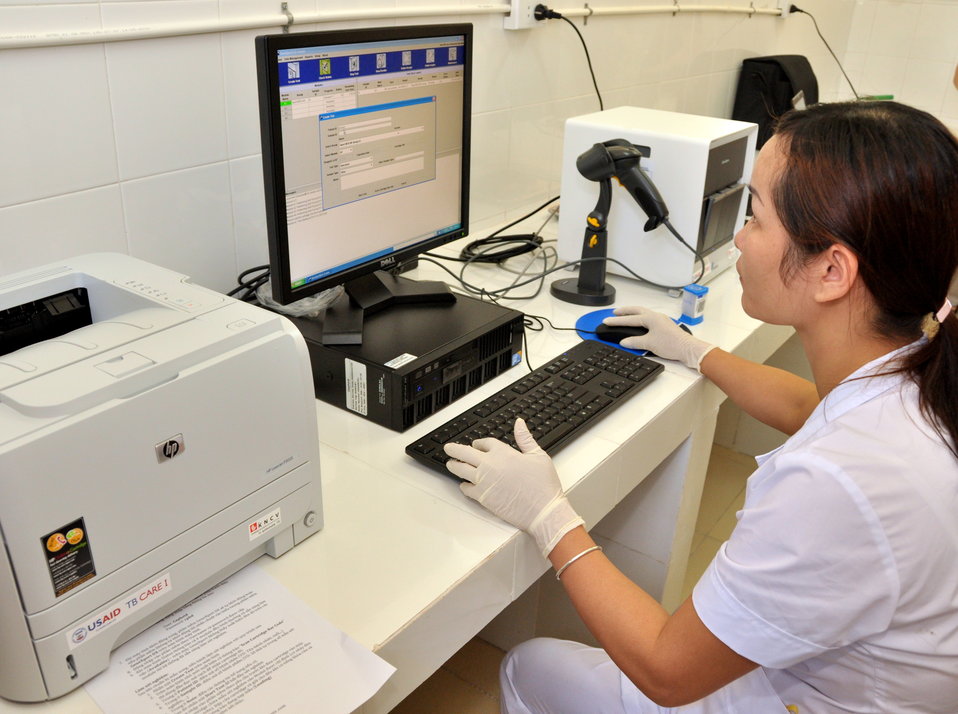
USAID supports new rapid detection TB equipment